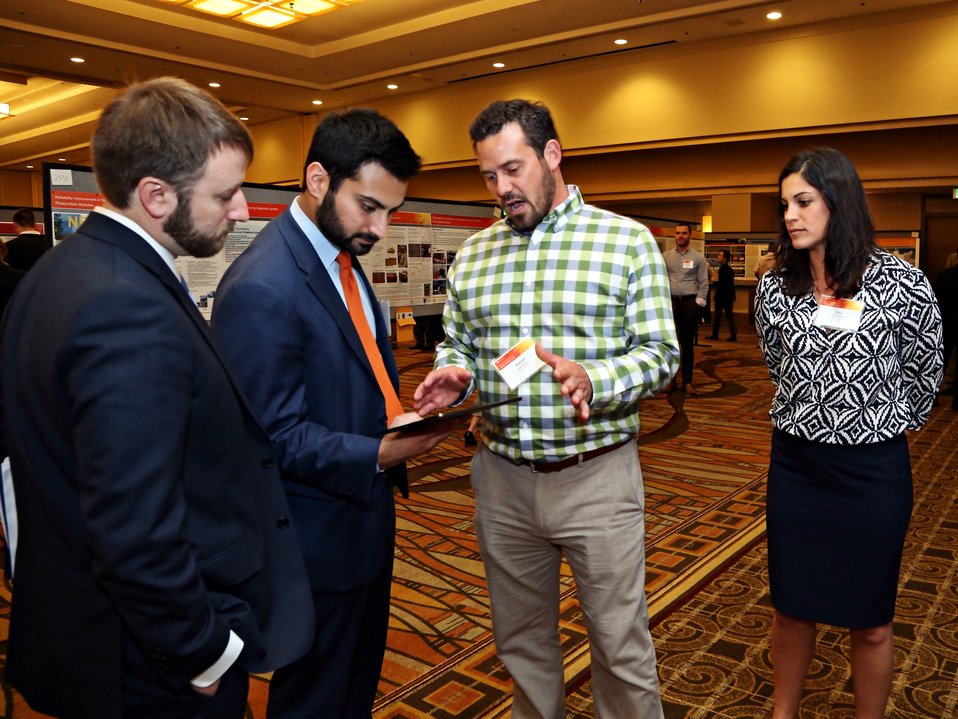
VIP Walkthough 2

Ali Zaidi, Deputy Director for Energy Policy, The White House Domestic Policy Council awardees in the tech forum.